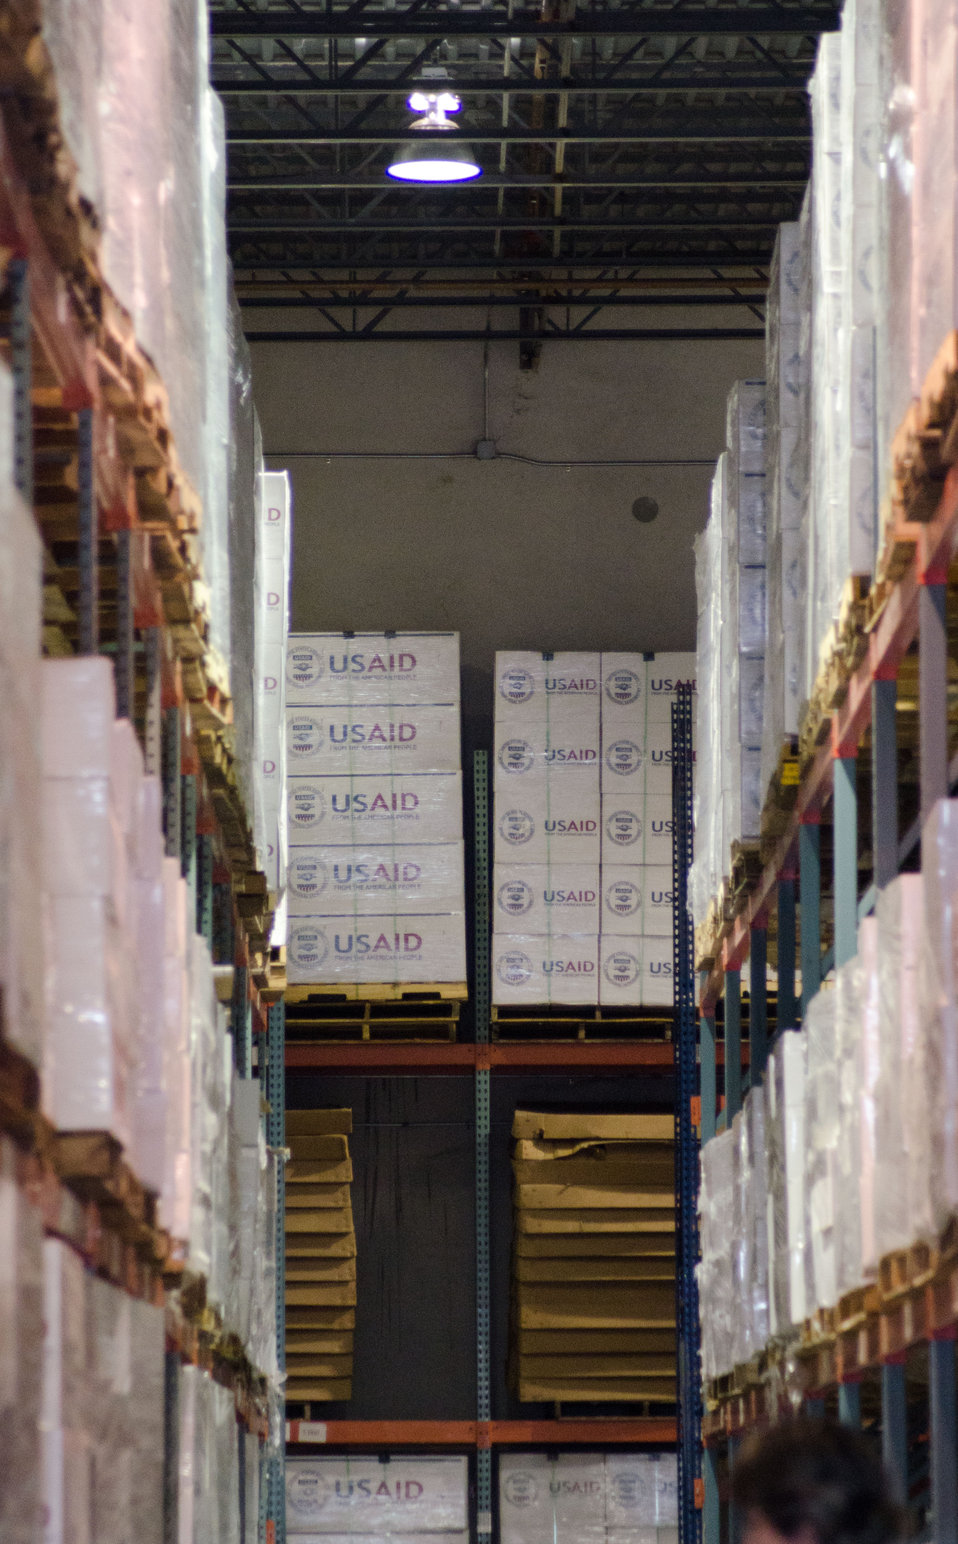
Crowley Logistics in Miami, FL on Friday, August 26, 2011 is one of three U.S. Agency for International Development (USAID) shipping and logistics facilities in the nation. In times of emergency humanitarian relief aid, they can respond with supplies delivered to aircraft at Miami International Airport within two hours. They utilize articulating forklifts, which hinge in the middle to store and retrieve pallets of supplies through narrow aisle ways. This allows for a higher density of stored supplies in the warehouse. Pallets of supplies are stacked three levels high. USAID provides humanitarian assistance through the Office of U.S. Foreign Disaster Assistance (OFDA). OFDA is the lead U.S. Government (USG) office charged with providing and coordinating USG humanitarian assistance in response to international emergencies and disasters. To achieve this, USAID works in cooperation with other USG offices such as the U.S. Department of Agriculture (USDA), and international humanitarian experts. The USDA provides food assistance to support emergency feeding programs in countries experiencing food shortages due to drought and civil conflict.